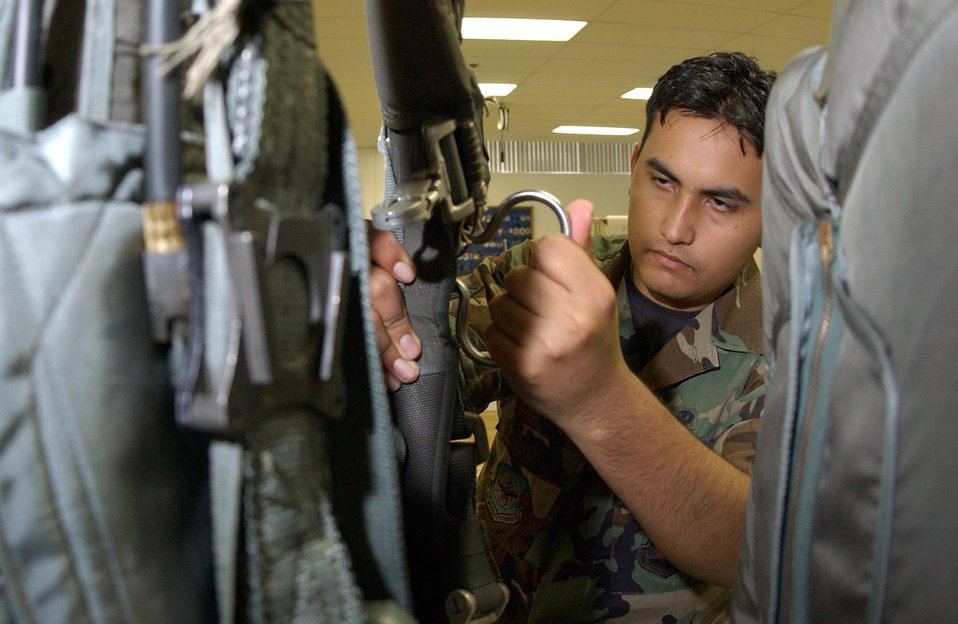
Survival Equipment

Airman 1st Class Joseph Elsey checks the tacking release on a back automatic parachute Wednesday, March 22, 2006, at MacDill Air Force Base, Fla. Airman Elsey performs daily inspections on the BA-22 parachutes to ensure they are ready if needed in an emergency. He is a survival equipment apprentice with the 6th Maintenance Squadron.